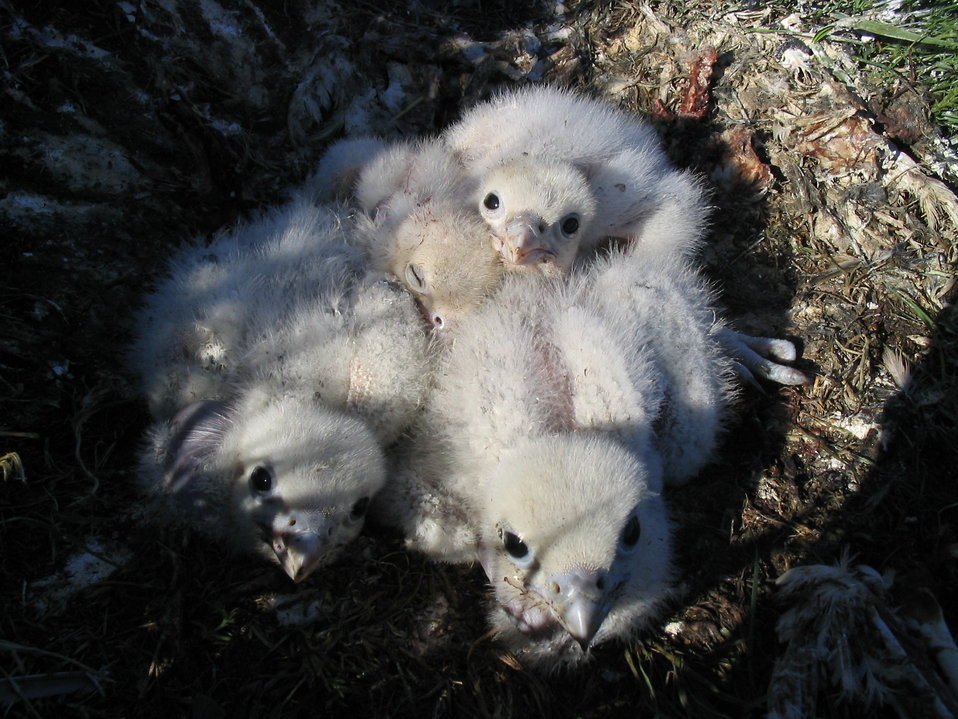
Gyrfalcon nestlings in nest

In 2004 a multi-year research project was initiated investigating Gyrfalcons within the YDNWR.

USFWS Yukon Delta NWR